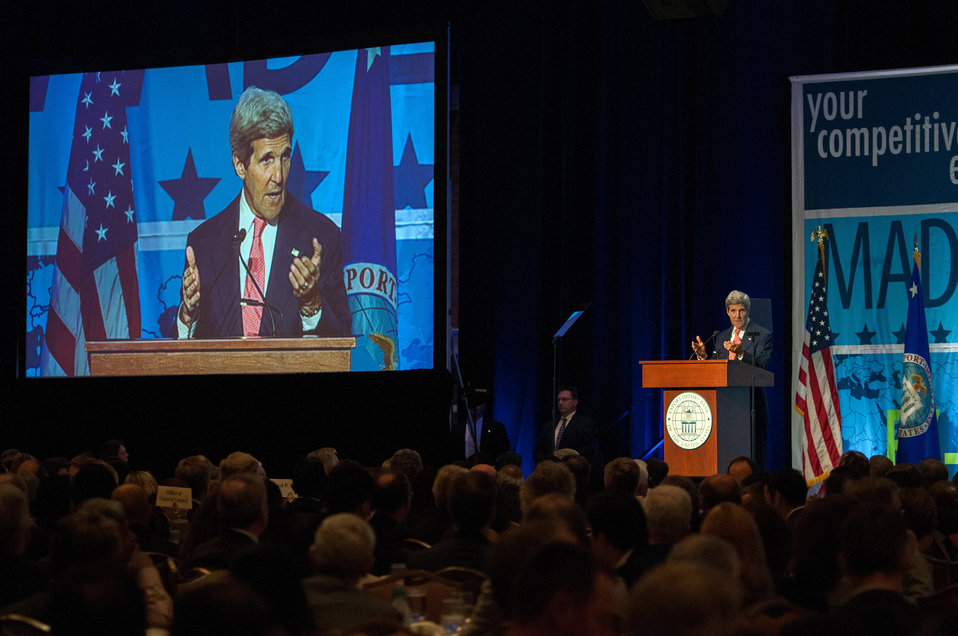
Secretary Kerry Delivers Remarks at the Export-Import Bank Annual Conference

U.S. Secretary of State John Kerry delivers remarks at the Export-Import Bank Annual Conference in Washington, D.C., on April 24, 2014.